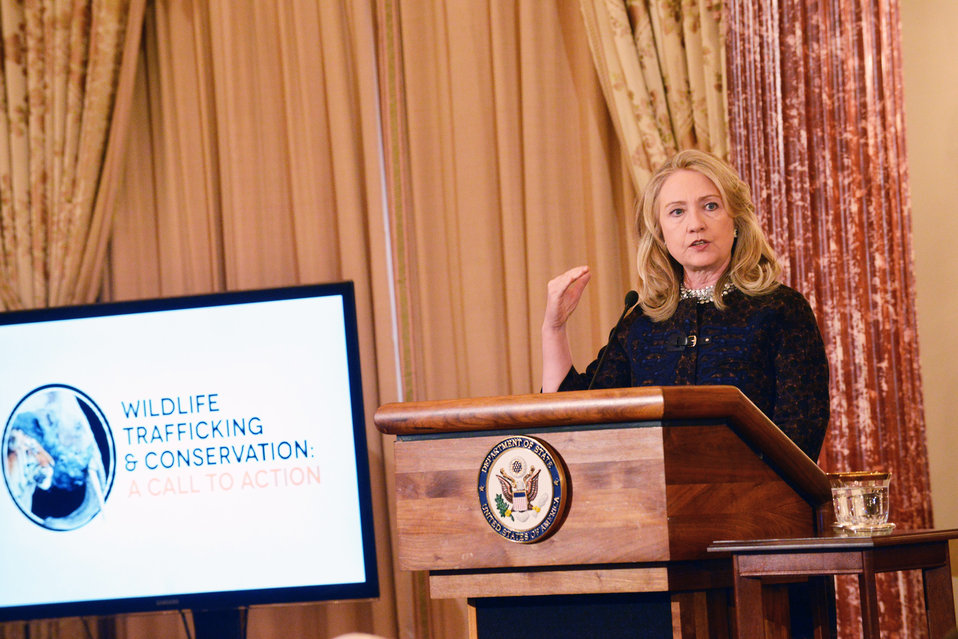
Secretary Clinton Delivers Remarks at the Partnership Meeting on Wildlife Trafficking

U.S. Secretary of State Hillary Rodham Clinton delivers remarks at the Partnership Meeting on Wildlife Trafficking at the U.S. Department of State in Washington, D.C., November 8, 2012.